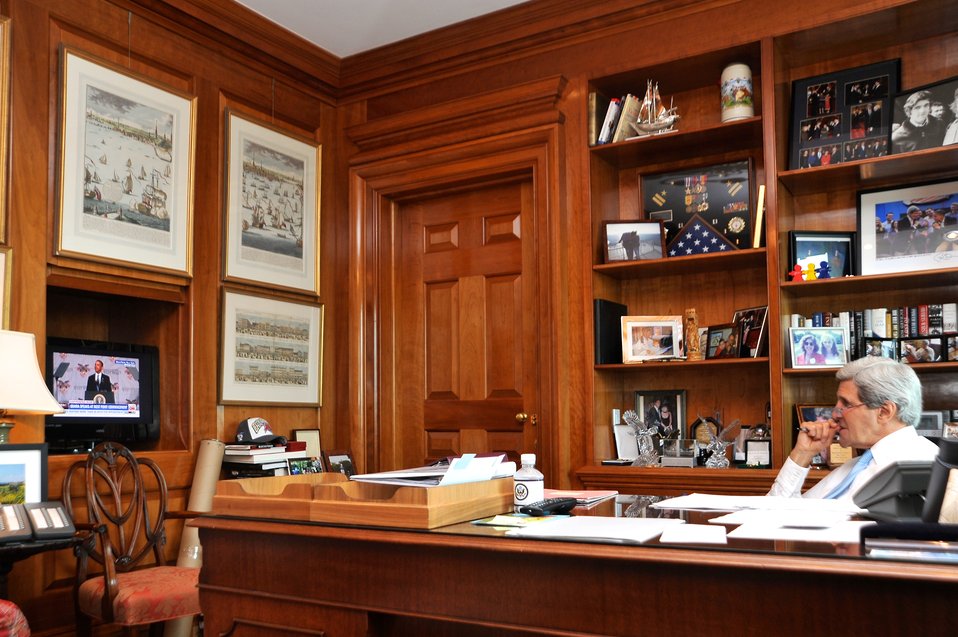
Secretary Kerry Watches President Obama Deliver Foreign Policy Speech at West Point

U.S. Secretary of State John Kerry sits at his desk in the Department of State as he watches President Obama deliver a commencement address focused on foreign policy to the graduating cadets at the U.S. Military Academy in West Point, N.Y., on May 28, 2014.